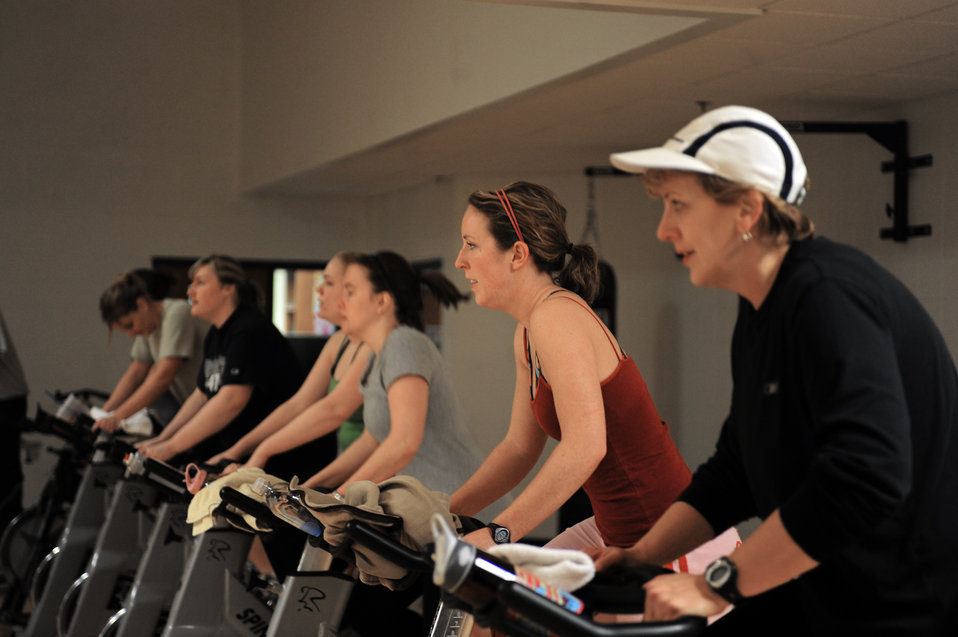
Freedom Miles encourages Ellsworth families to stay healthy

Wives of deployed Airmen endure a spin class at the Bellamy Fitness Center Feb. 2, 2010, at Ellsworth Air Force Base, S.D. The Freedom Miles program was developed by Lori Waddell of the 28th Force Support Squadron as a means to stay active and meet other spouses of deployed Airmen.